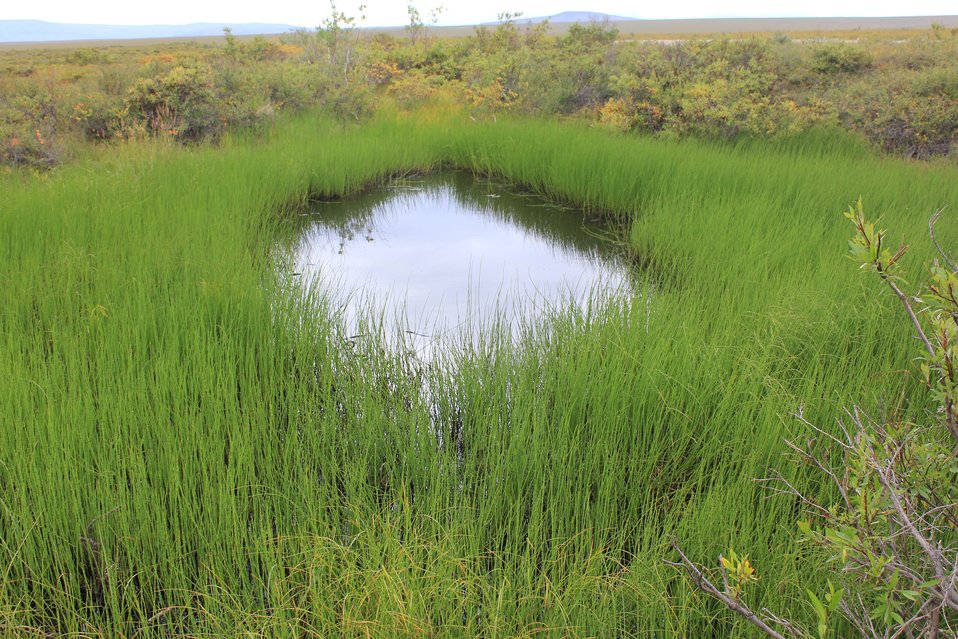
A thermo-karst melt pond adjacent to the road which accelerated the melting of permafrost. On the road from Nome beyond Pilgrim Hot Springs. This now becoming a wetland wildlife habitat.